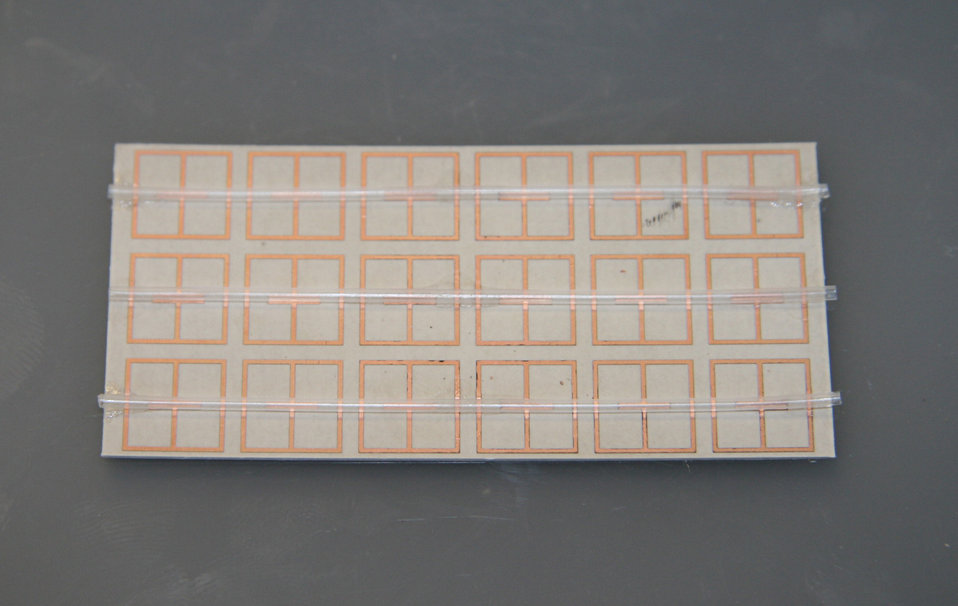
Metasurface

NIST's fluid-tunable 'metasurface' consists of copper structures and plastic tubing mounted on composite board. The presence of water in the tubing changes the resonant frequency at which the metasurface absorbs and stores energy.